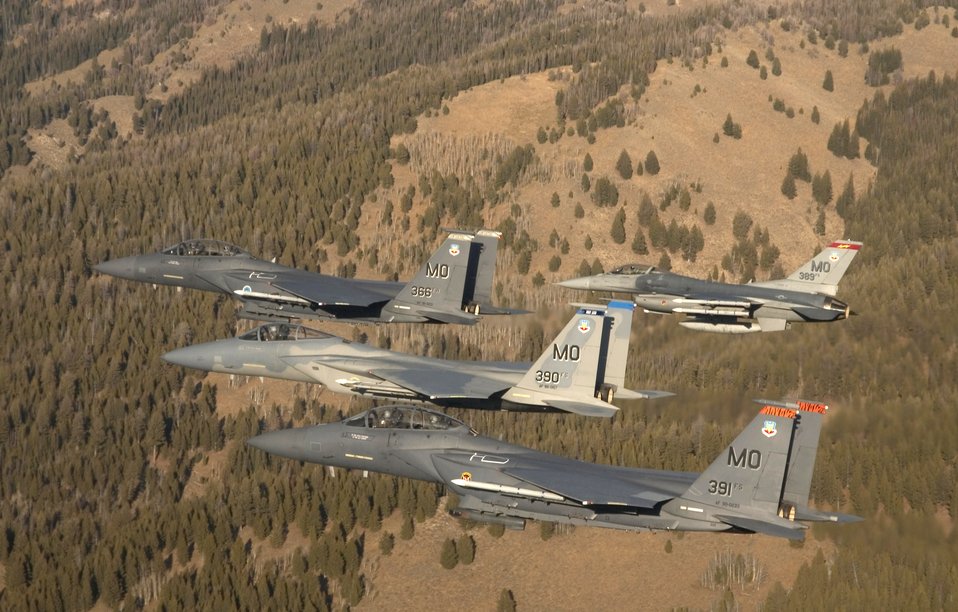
Flying over Idaho

A four-ship formation flies out to the Idaho training ranges Nov. 1. Col. Anthony Rock, 366th Fighter Wing commander, led the formation consisting of two F-15 Strike Eagles, an F-15 Eagle and an F-16 Fighting Falcon from the 366th FW at Mountain Home Air Force Base, Idaho. The 366th Fighter Wing began the first phase of its F-16 drawdown when five jets departed the base Nov. 2. The departure is part of the wing's realignment.